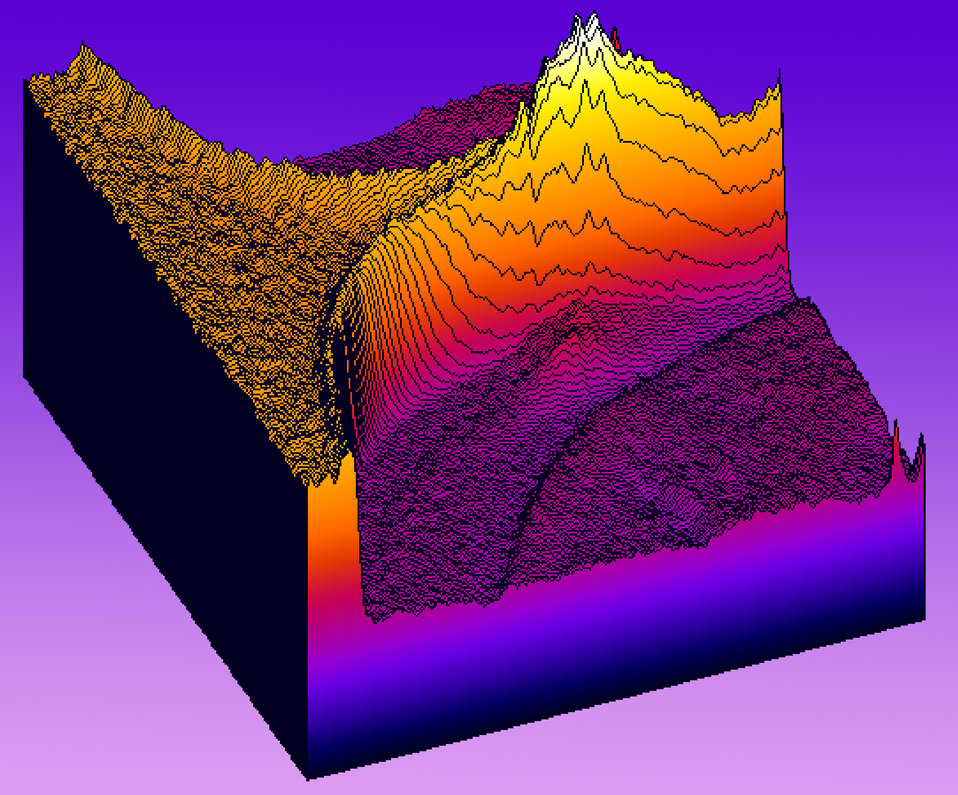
Nanocells; liposomes

The peaks on this three-dimensional plot indicate a high concentration of liposomes forming in a microchannel.